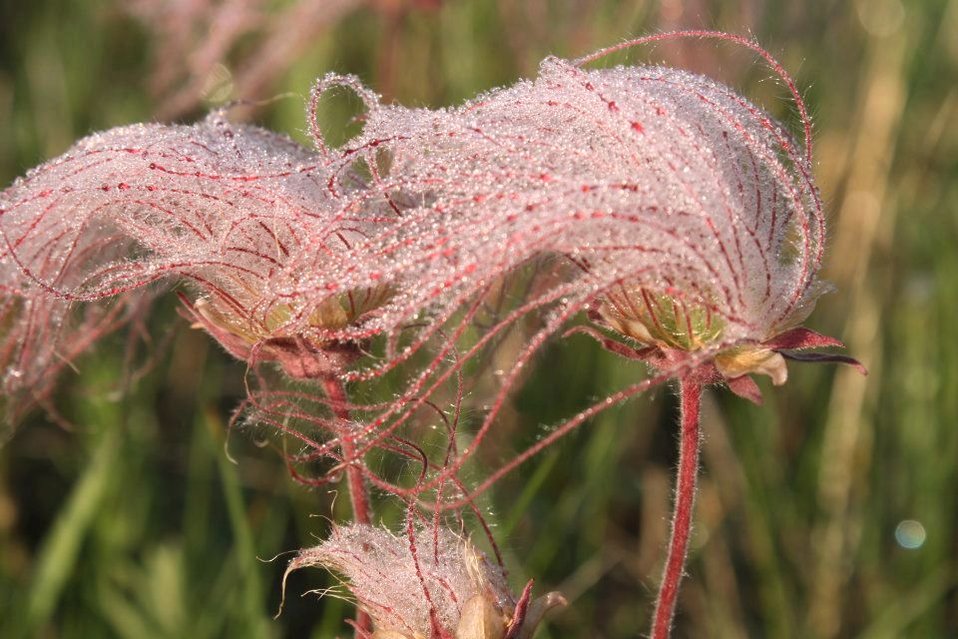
Prairie Smoke on Bowdoin WMD